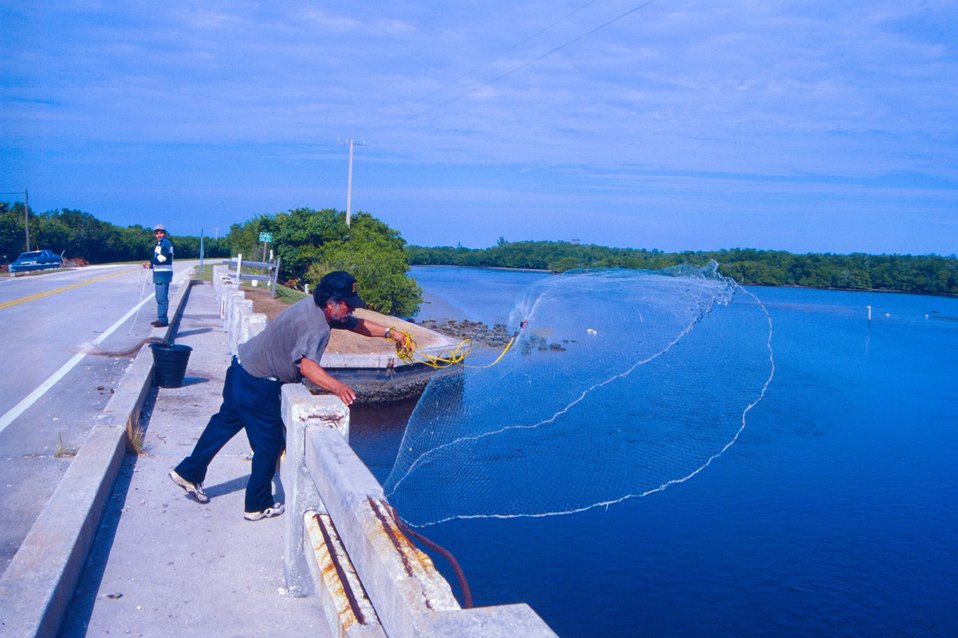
A skilled cast netter aims for a school of mullet off a southeastern causeway.